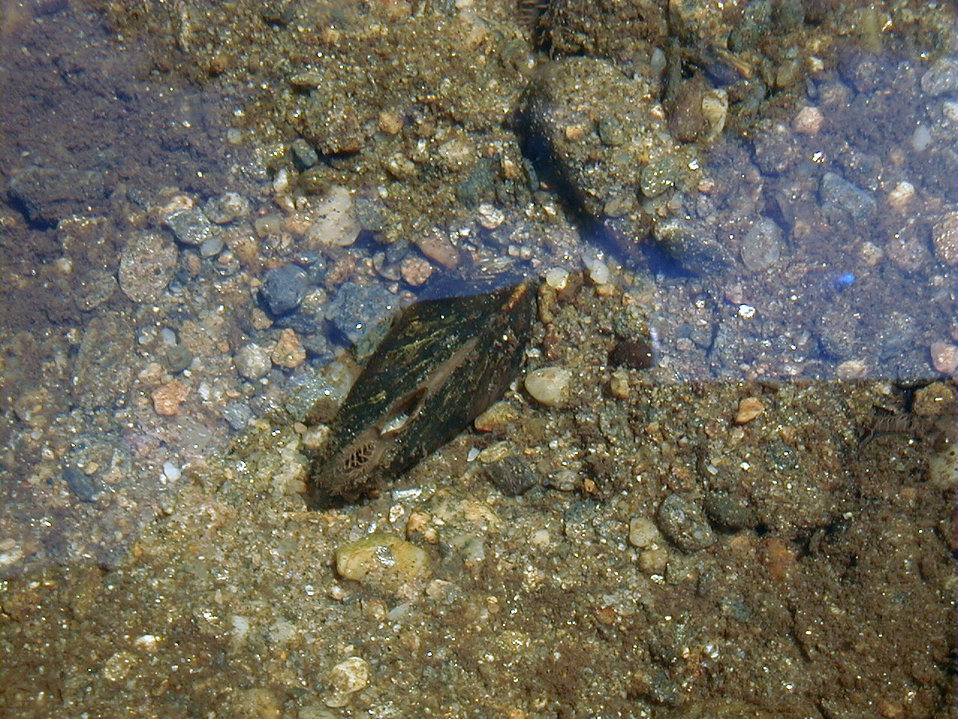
Dwarf wedgemussel (Alasmidonta heterodon)

USFWS Headquarters
Status: Endangered